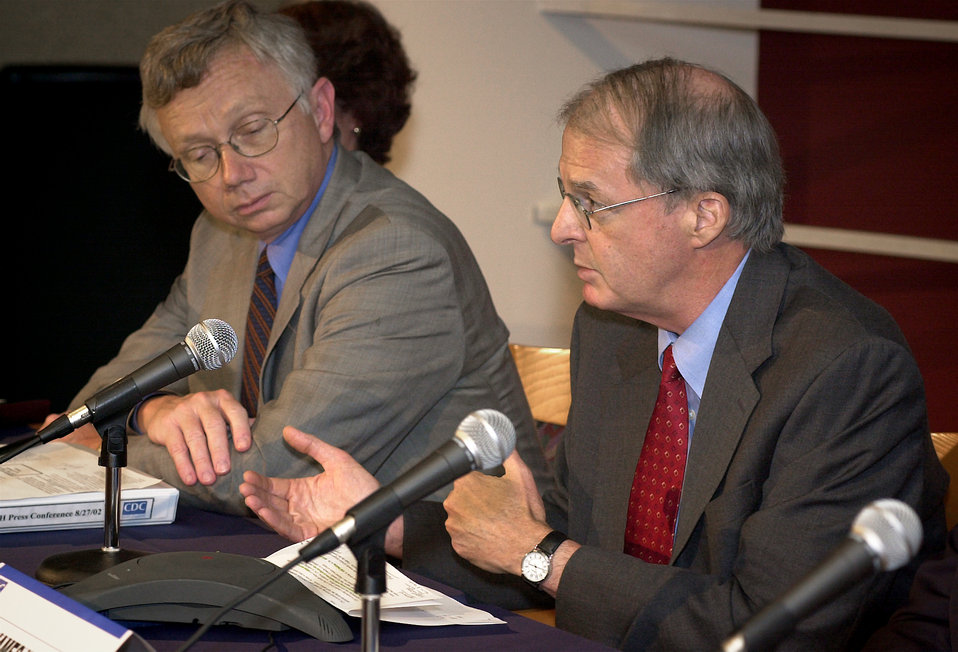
Centers for Disease Control and Prevention Bioterrorism Preparedness Press Briefing, August 27, 2002.